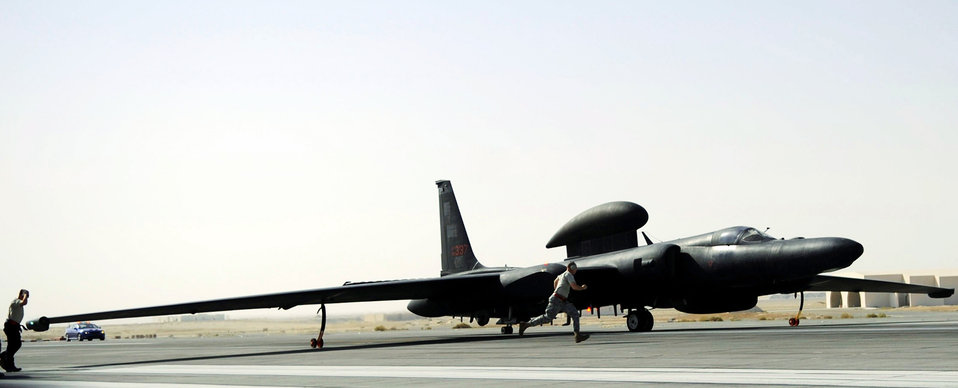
Airmen provide intelligence, surveillance, reconnaissance

Airmen quickly remove the final pins from a U-2 before a flight Oct. 4, 2009. The sortie was Capt. Peter J. Gryn's first combat mission. The U-2 is the primary source of high-altitude intelligence, surveillance and reconnaissance. Captain Gryn is deployed from Beale Air Force Base, Calif.